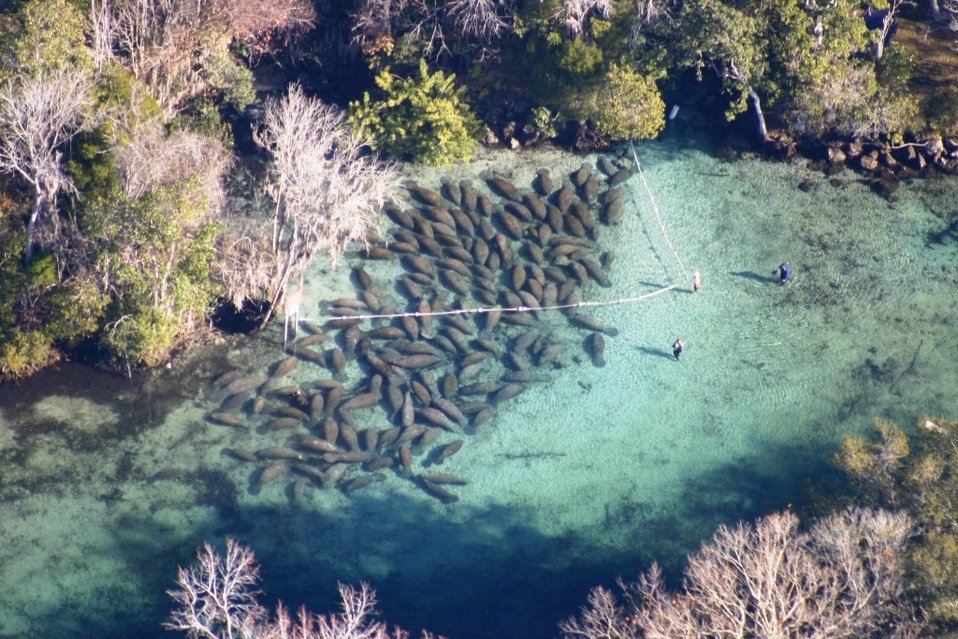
Crystal River National Wildlife Refuge, FL

Manatees congregate at warm springs.